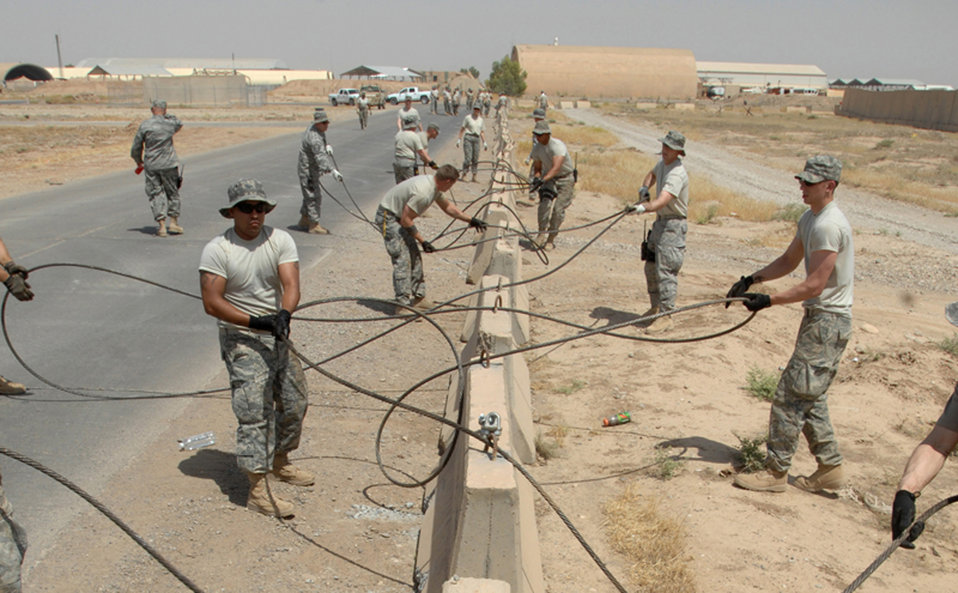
Volunteers create safety barrier

Airmen of the 506th Air Expeditionary Group thread aircraft cable through barriers to create a barricade around the Kirkuk Air Base, Iraq, flightline June 5 to mitigate vulnerabilities and lessen safety risks. The self-help security project saved an estimated $500,000 by using existing assets and volunteers.